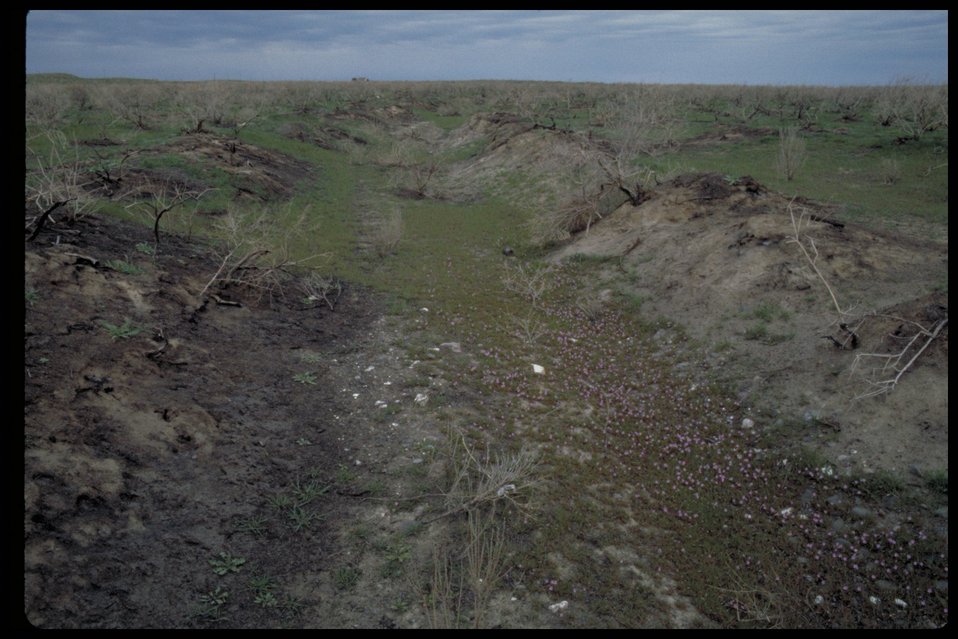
Oregon Trail along Hwy 78 Lower Snake River District